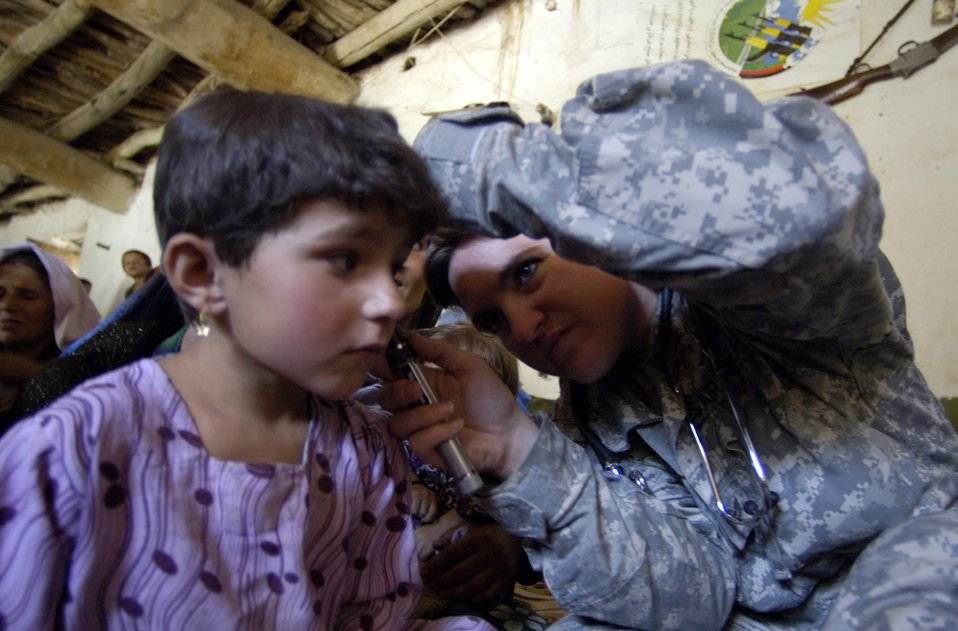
Airmen trek over mountains to deliver aid in Afghanistan

Panjshir Provincial Reconstruction Team member Tech. Sgt. Jenina Rose looks at a village girl's ears Aug. 7 in Roydara village in the Shutol district of Panjshir province, Afghanistan. Sergeant Rose is a medical technician deployed from Mountain Home Air Force Base, Idaho. She and her fellow PRT members made an 11-mile round-trip trek over a mountain pass and into a river valley to provide medical care to Afghans living in Roydara.